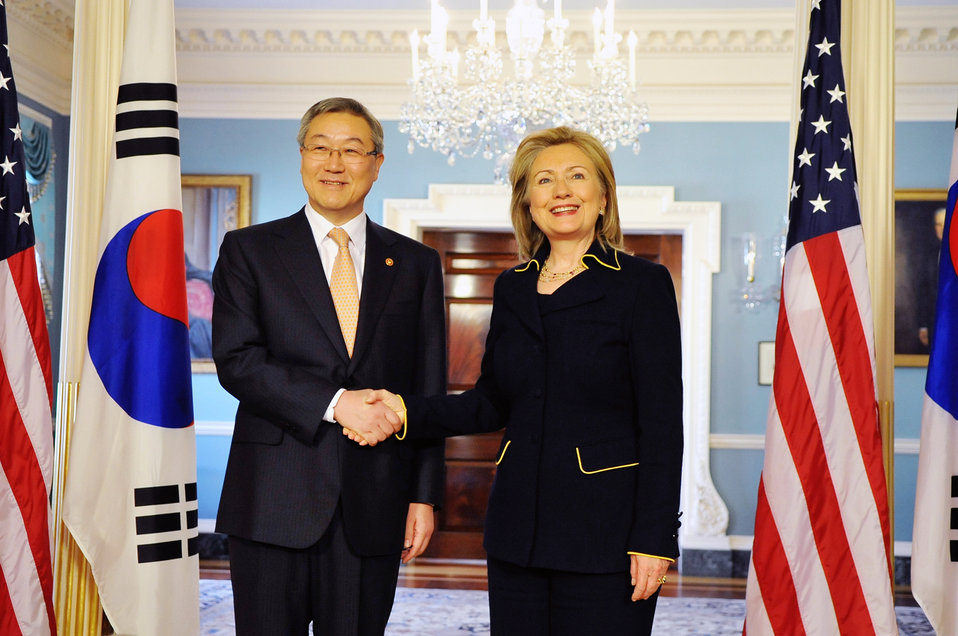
Secretary Clinton Shakes Hands With Republic of Korea Foreign Affairs and Trade Minister Kim Sung-Hwan

U.S. Secretary of State Hillary Rodham Clinton poses for a photo with Republic of Korea Foreign Affairs and Trade Minister Kim Sung-Hwan at the U.S. Department of State in Washington, D.C., on December 6, 2010.